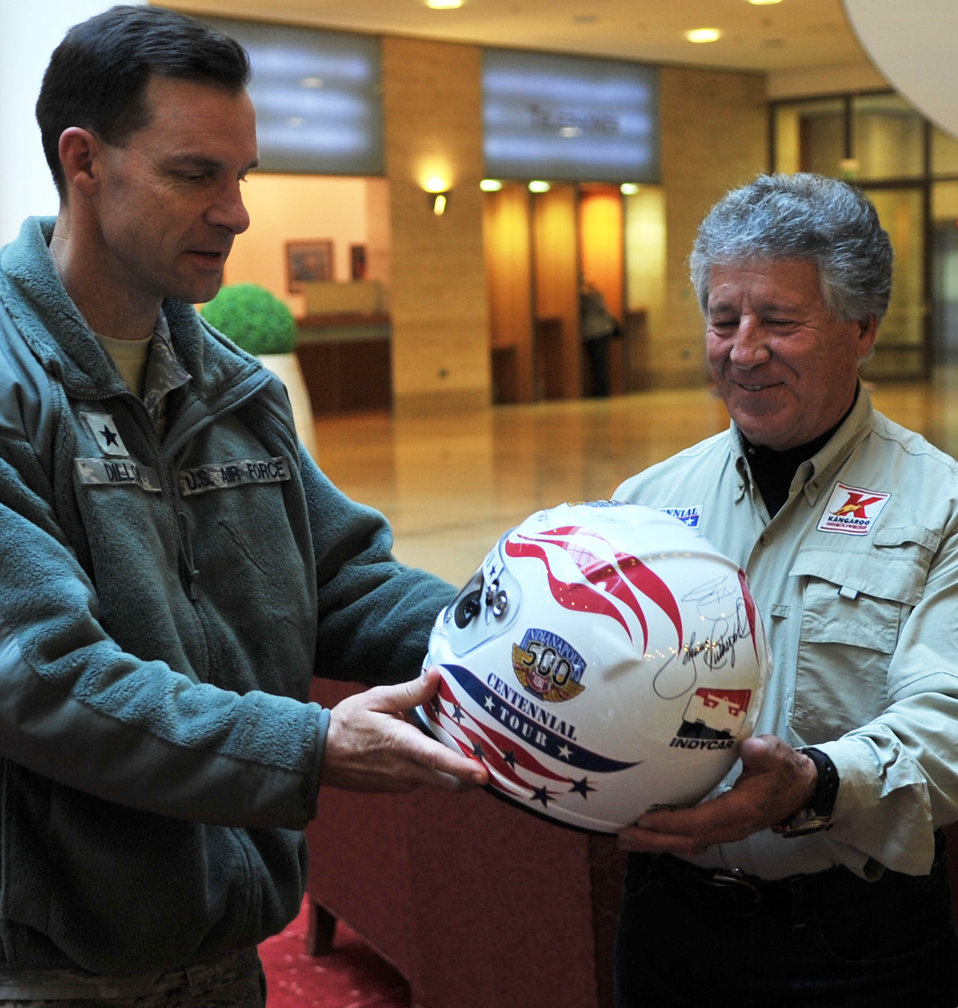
IndyCar drivers take pit stop at Ramstein

Brig. Gen. Mark Dillon receives an autographed helmet from Mario Andretti, an Indy 500, Daytona 500 and Formula 1 champion, during the Indy 500 Centennial Tour, Jan. 14, 2011, at Ramstein Air Base, Germany. The Indy 500 Centennial tour brings Indy racing teams to Europe and the Middle East over a 10-day tour to honor and boost morale for service members and their families. General Dillon is the 86th Airlift Wing commander